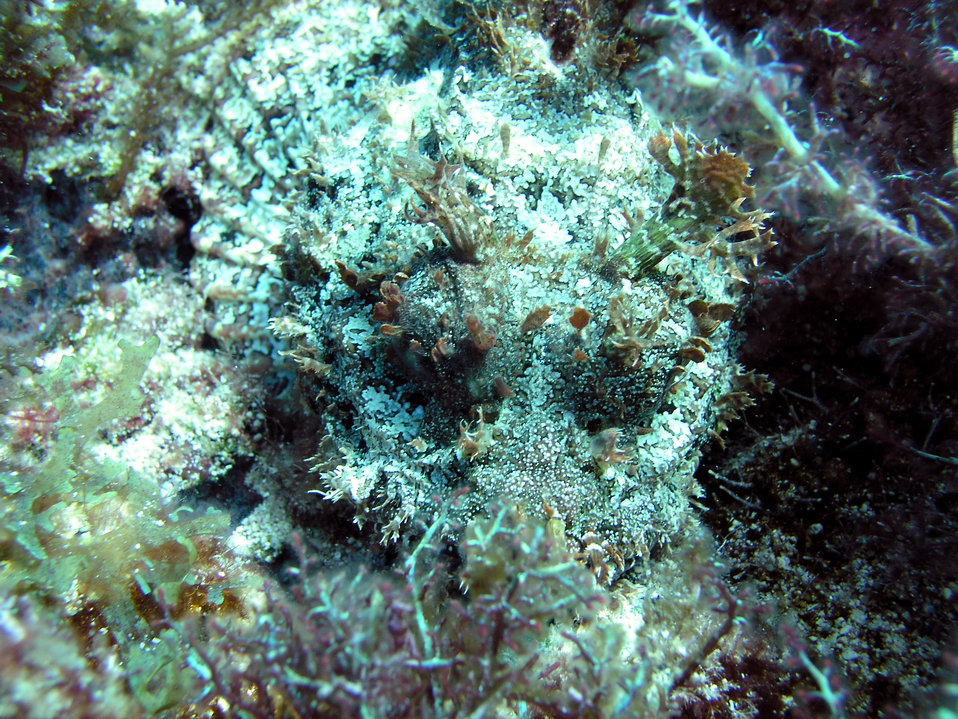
Spotted scorpionfish(Scorpaena plumieri)